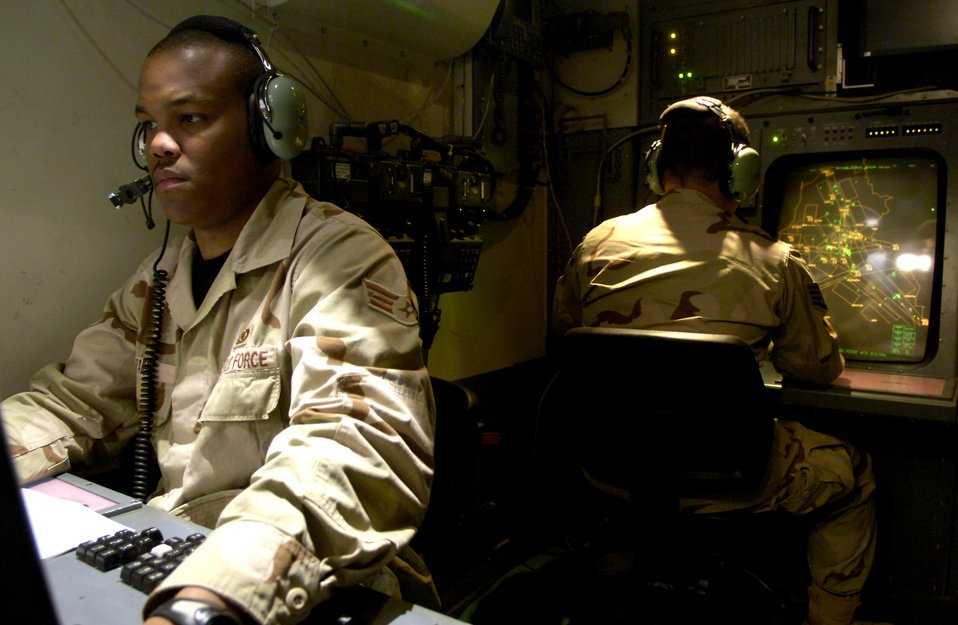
Balad remains one busy airfield

Senior Airman Derrick Farr performs surveillance and identification procedures with aircraft flying in the vicinity of Balad Air Base, Iraq, on May 15, 2006. Controllers here monitor more than 200,000 square miles of air space. The airfield is the busiest single-runway airfield in the Department of Defense. Airman Farr is an air traffic controller with the 332nd Expeditionary Operation Support Squadron and is an Air National Guardsman deployed here from Savannah, Ga.